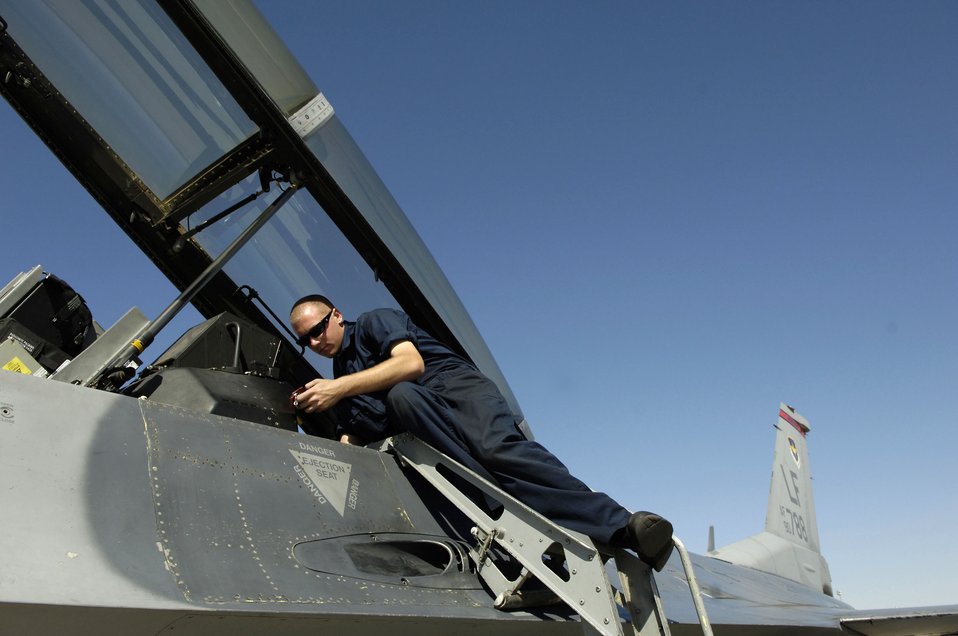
Falcons support Eagle school

Airman 1st Class Andrew Davis performs an F-16 Fighting Falcon through-flight inspection in between launches Oct. 18 at Nellis Air Force Base, Nev. Airman Davis is a 63rd Fighter Squadron crew chief from Luke AFB, Ariz. The 63rd FS is at Nellis AFB supporting the F-15 Eagle Weapons School Instructor Course in an adversary tactics role.